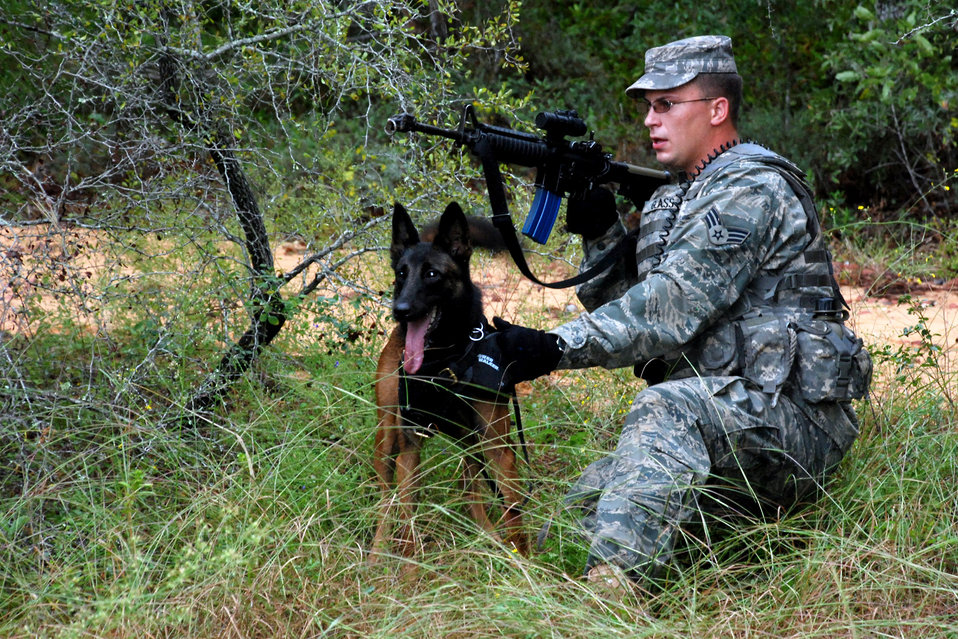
Brave Defender training goes to dogs

Senior Airman Eric Glass and his military working dog, Kim, watch a